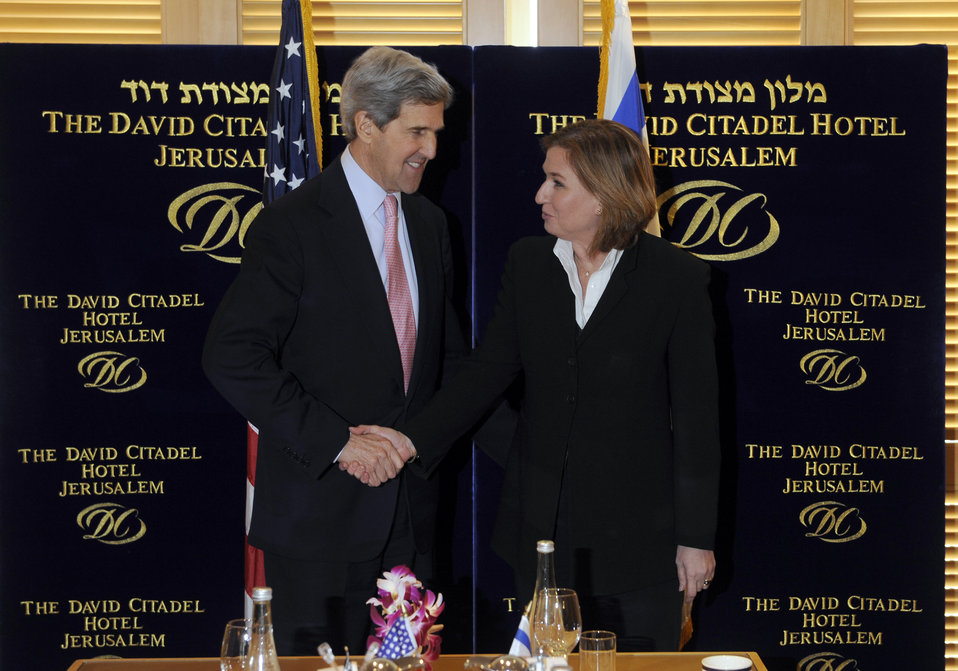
Senator Kerry With Israeli Opposition Leader Tzipi Livni

Senator John F. Kerry shakes hands with leader of the opposition Tzipi Livni after their meeting at the David Citadel Hotel, Jerusalem, March 1, 2010.